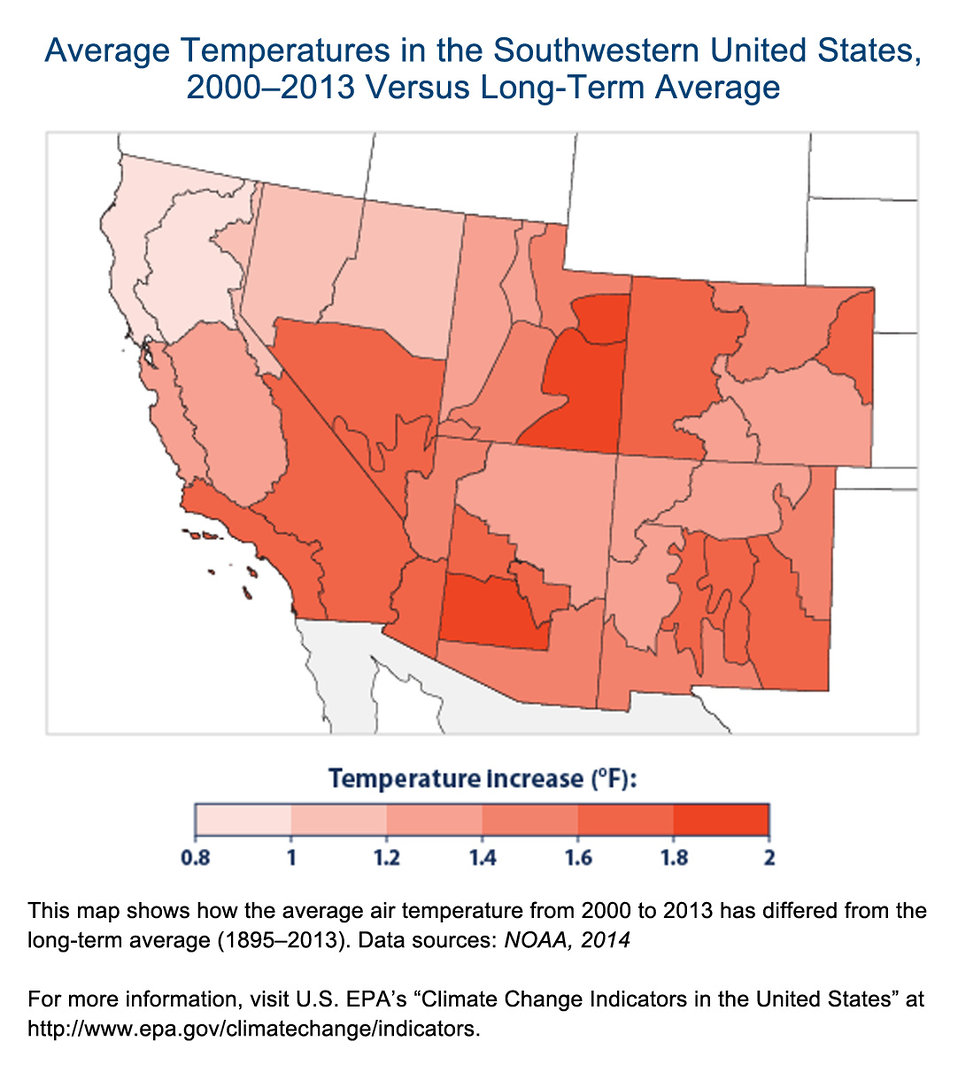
Average Temps in Southwest

Climate change in the Southwest: between 2000 and 2013, every part of the Southwest experienced higher average temperatures than the long-term average. Large portions of the area have also experienced drought conditions in the most recent decade.